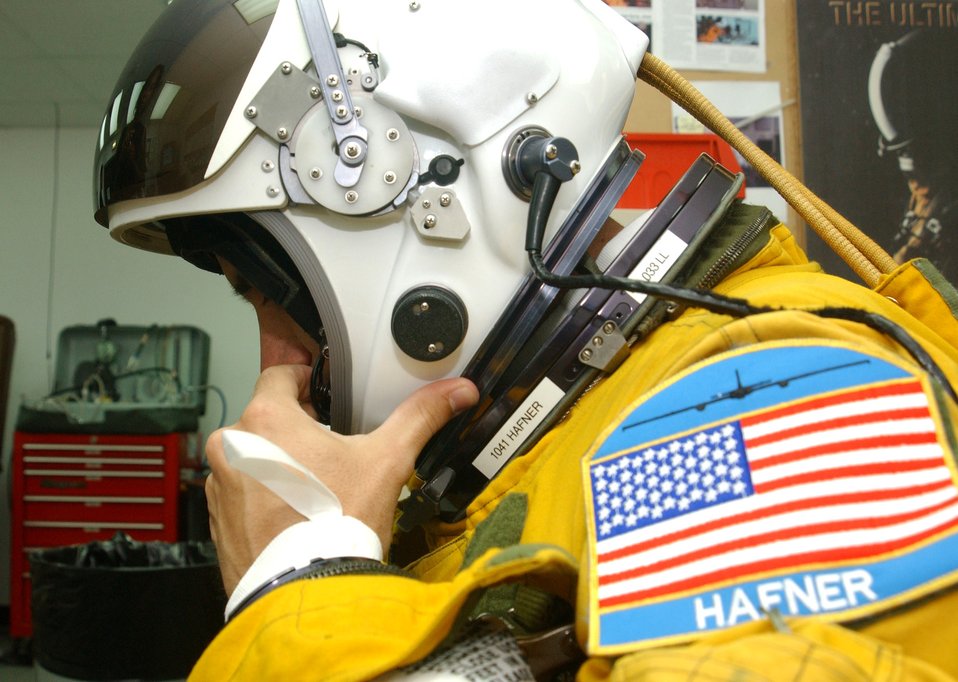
U-2 operations

Capt. Greg Hafner pulls his S-1034 helmet down onto a clasp at a forward-operating base in Southwest Asia Sept. 5. Captain Hafner, a U-2 pilot with the 99th Expeditionary Reconnaissance Squadron, flew a mission about an hour later.